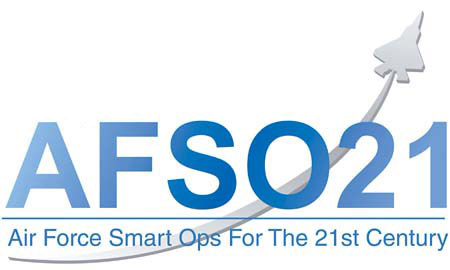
AFSO 21 Improves War-Ready Engines

The 20th Component Maintenance Squadron is currently taking steps to improve the process of producing war-ready engines by applying Air Force Smart Operations for the 21st Century.